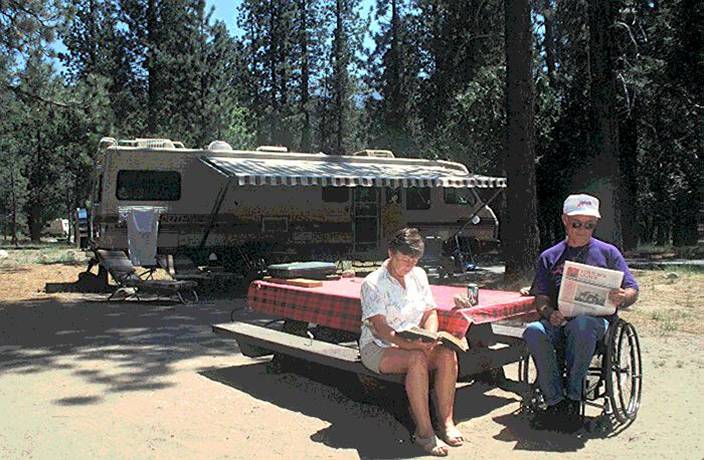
Camping access

The U.S. Forest Service has camp sites available for all recreationists in America’s National Forests. Contact your local forest or grassland for more information and visit Recreation.gov to make reservations.